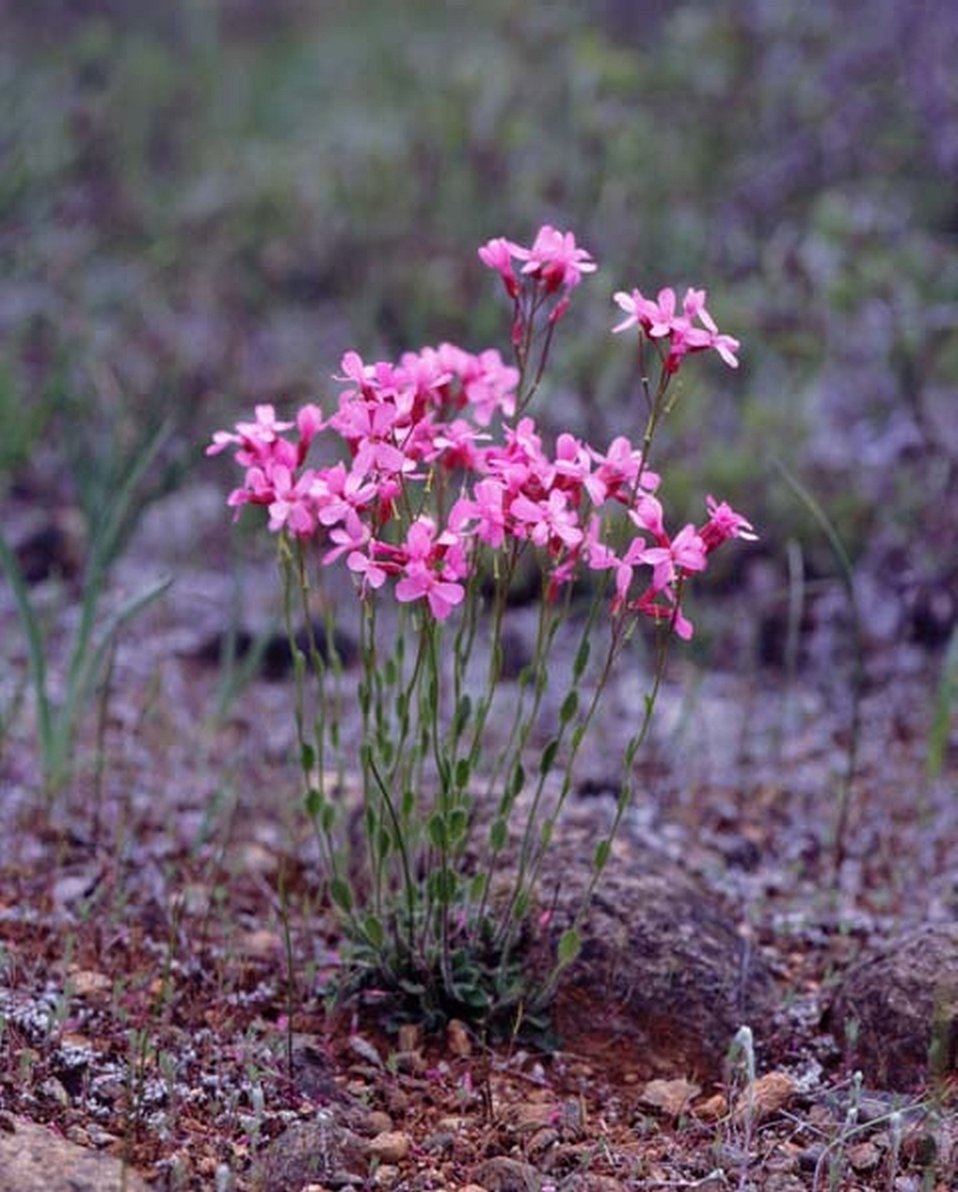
Medium shot of Phlox wildflowers.